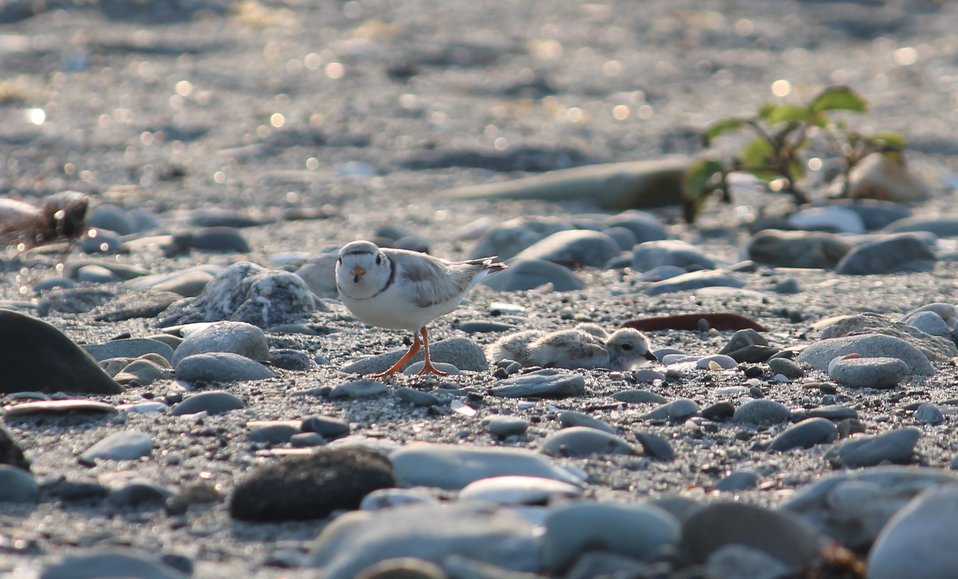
Piping Plover (RI)

Piping Plover photographed at Second Beach in Middletown, Rhode Island.